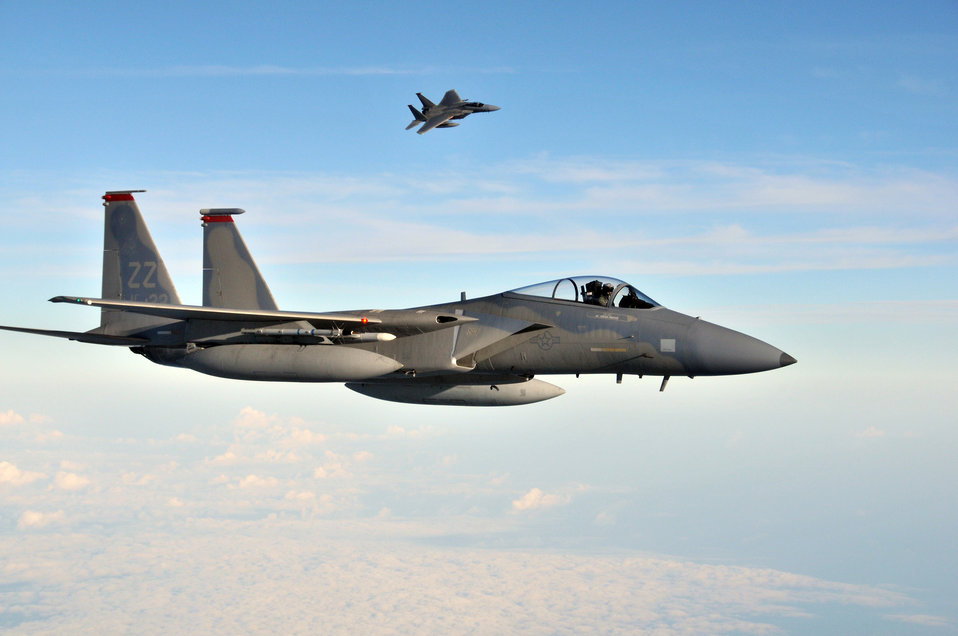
Joint Bilateral Training

F-15C Eagles from the 67th Fighter Squadron at Kadena Air Base, Japan, participate in bilateral training with other U.S. forces and the Japan Air Self Defense Force Feb. 25, 2010.